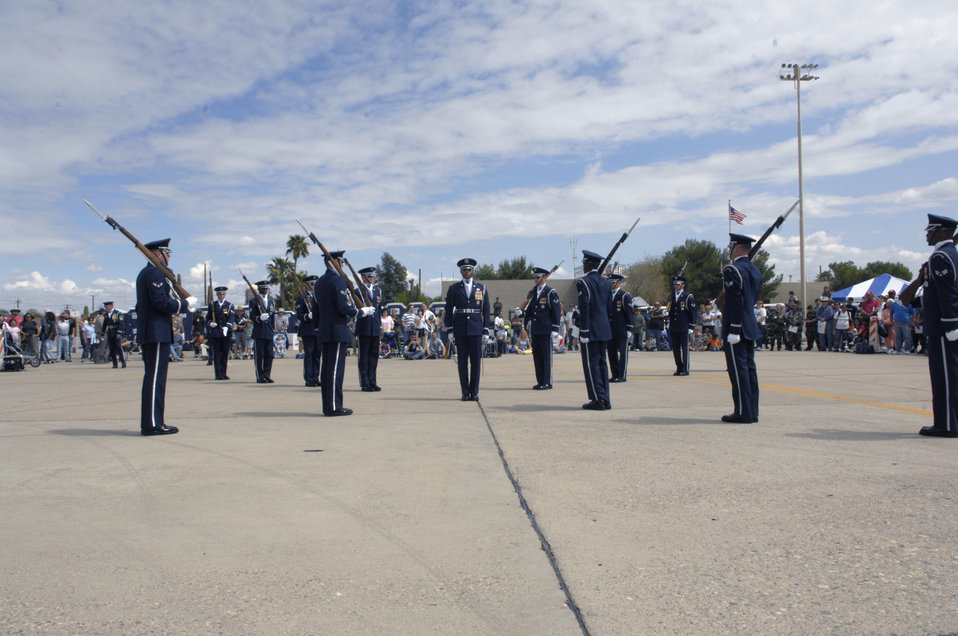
Showcasing the Air Force mission

The United States Air Force Honor Guard Drill Team performs March 24 during the Luke Air Force Base, Ariz., air show. The drill team is the traveling component of the Air Force Honor Guard and tours Air Force bases worldwide showcasing the precision of today's Air Force to recruit, retain and inspire Airmen for the Air Force mission.